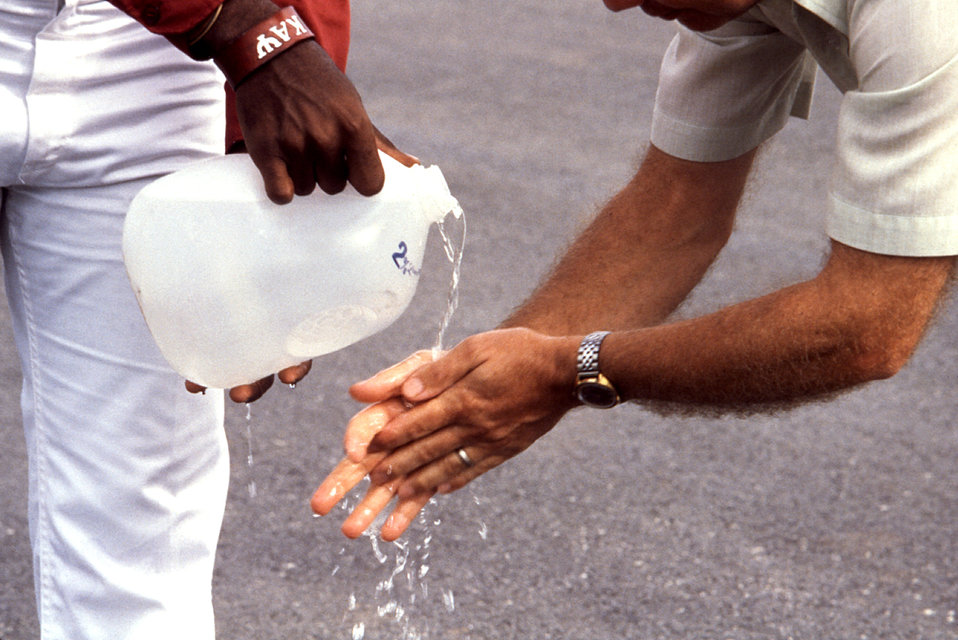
This 1981 photograph depicts two vector-control field technicians in the process of hand-washing after working with insecticide chemicals; one technician pours water over the hands of another field specialist as he washes any possible contaminants off his hands.